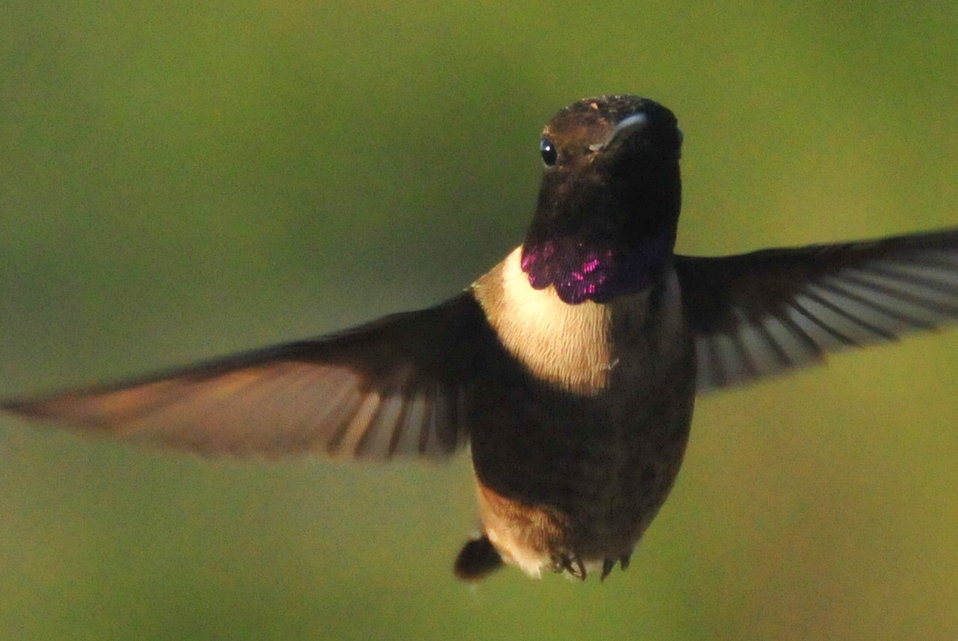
Black Chinned Hummingbird Browns Park NWR